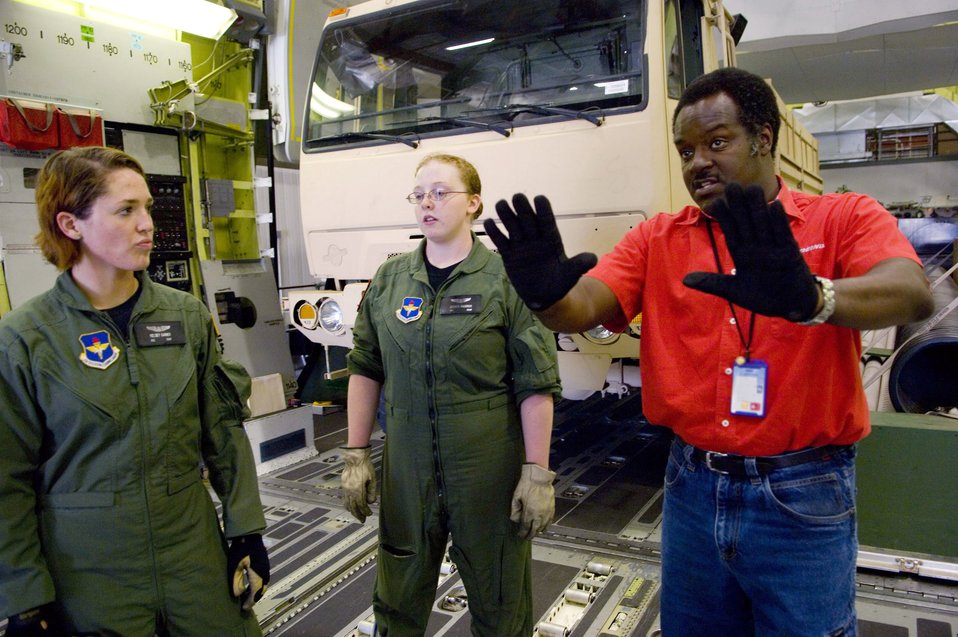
C-17 loadmaster students learn from masters of the craft

Howard Thagard, a loadmaster instructor with the C-17 Globemaster III aircrew training system instructs loadmaster students Airmen 1st Class Kelsey Gainer (left) and Jessica McLeroy in an $18 million cargo compartment trainer at Altus Air Force Base, Okla. Inside the simulated C-17 cargo compartment students get to try their hand at a variety of loads, to include pallets, vehicles, helicopters, heavy equipment and aeromedical set-ups.